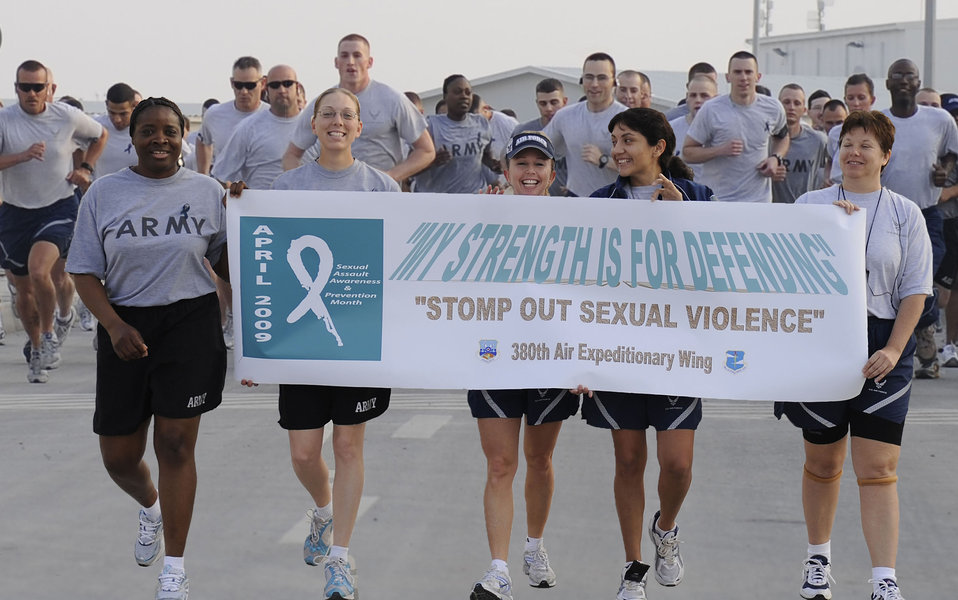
380th runs for Sexual Assault Awareness and Prevention Month

Airmen and Soldiers from the 380th Air Expeditionary Wing at an air base in Southwest Asia participated in a 1 mile walk and 5k and 10k runs April 8 as part of Sexual Assault Awareness and Prevention Month.